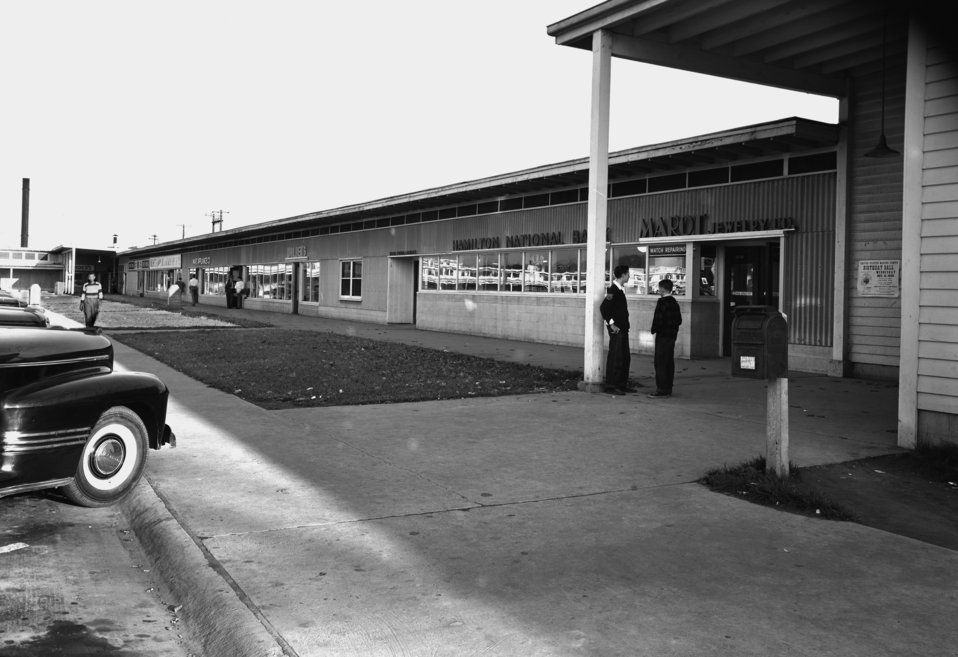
Grove Center Shopping District Oak Ridge 1948

5298-2 DOE photo Ed Westcott 11-18-1948 Oak Ridge Tennessee